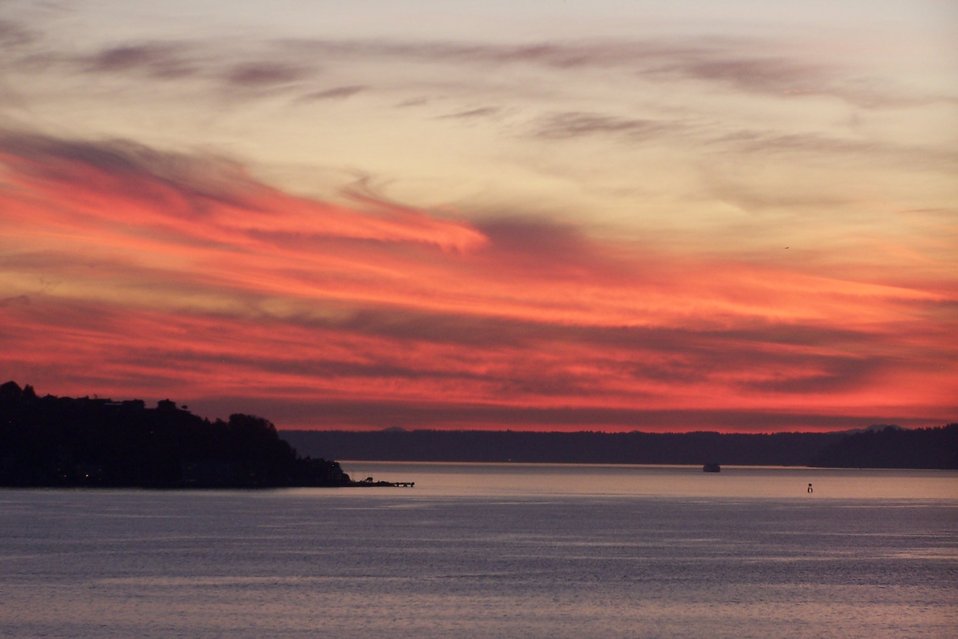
Sunset over Elliott Bay

Looking west from Seattle across Elliott Bay at sunset.

Learn more about the Puget Sound Ecosystem

Learn more about EPA